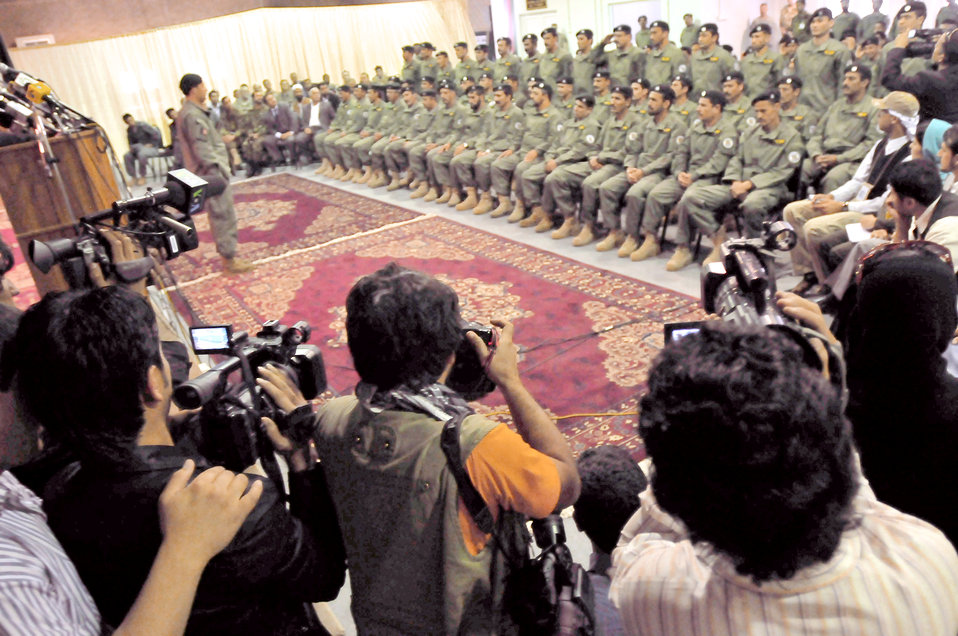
Operation Enduring Freedom

Afghan soldiers listen to speeches and are photographed by local and international press during a transition ceremony May 5, 2010, at a conference center on the Afghan National Army Air Corps base in Kabul, Afghanistan. The soldiers are from the Ministry of Interiors Air Interdiction Unit.